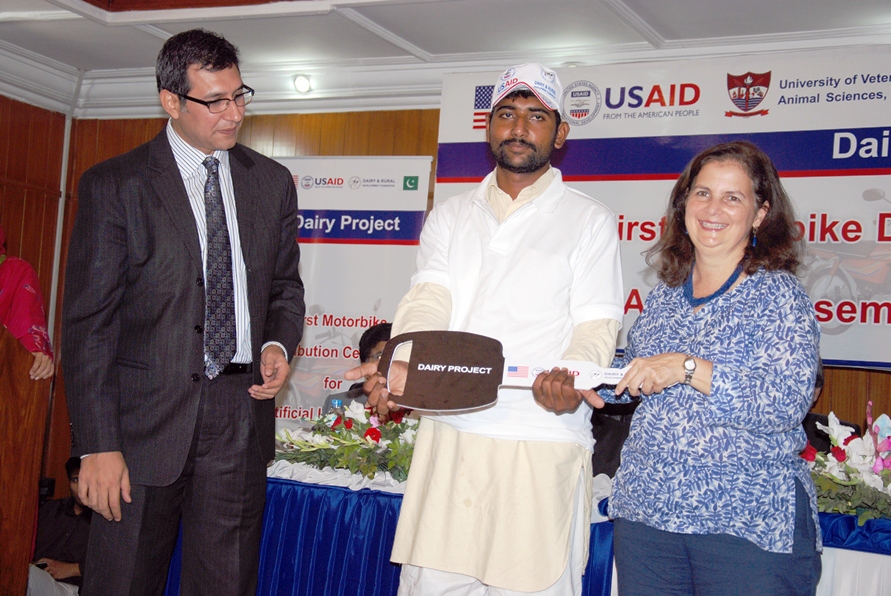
U.S. Consul General Nina Fite presenting motorcycle keys to a successfull AI technician 1